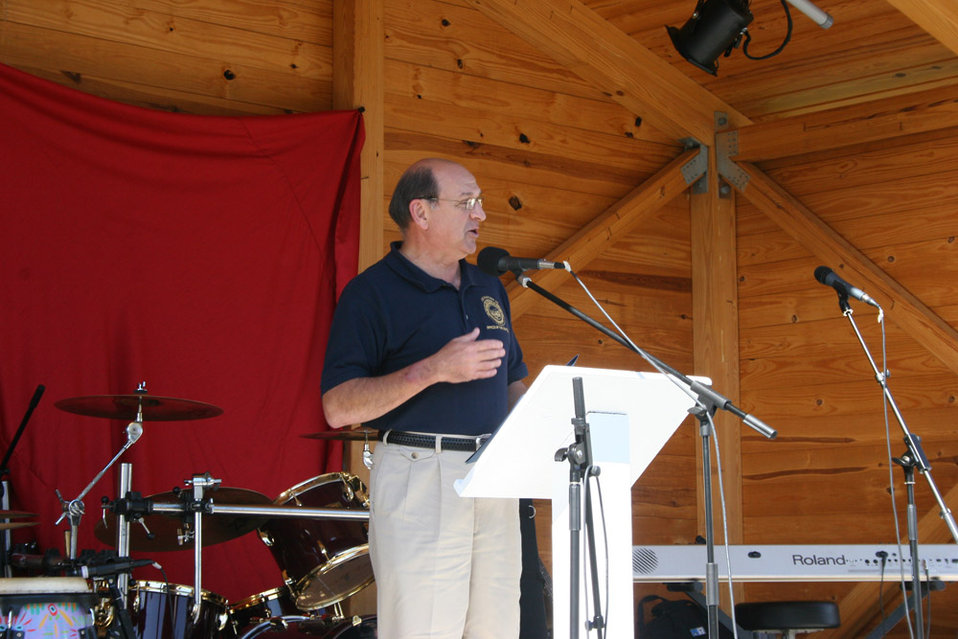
Freshwater Folk Festival

The 5th Annual Freshwater Folk Festival at White Sulphur Springs National Fish Hatchery in West Virginia.Credit: USFWS